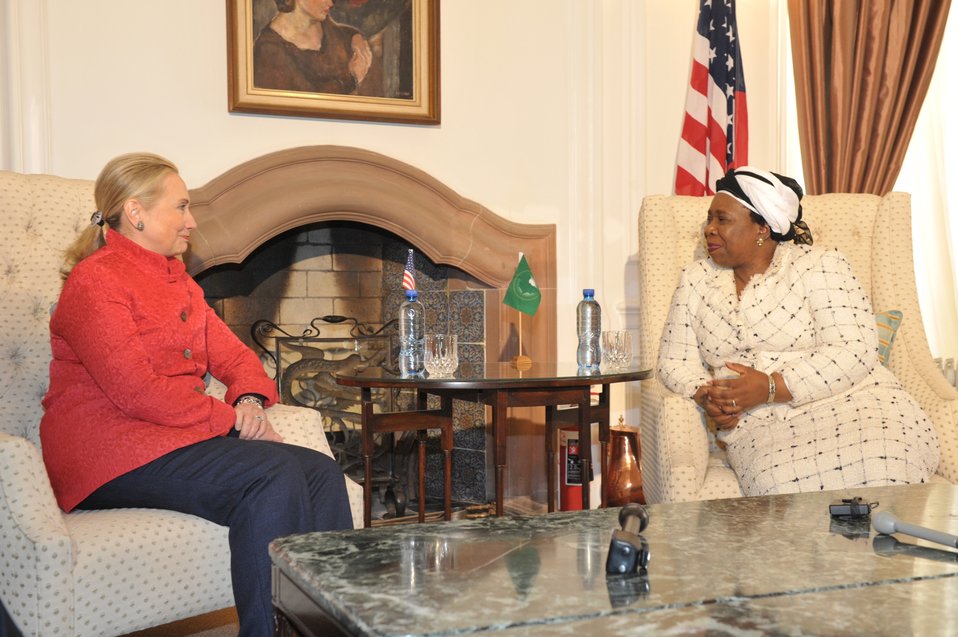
Secretary Clinton Meets With AU Chair-Designate Dlamini-Zuma

U.S. Secretary of State Hillary Rodham Clinton meets with AU Chair-Designate Nkosazana Dlamini-Zuma in Johannesburg, South Africa, on August 7, 2012.